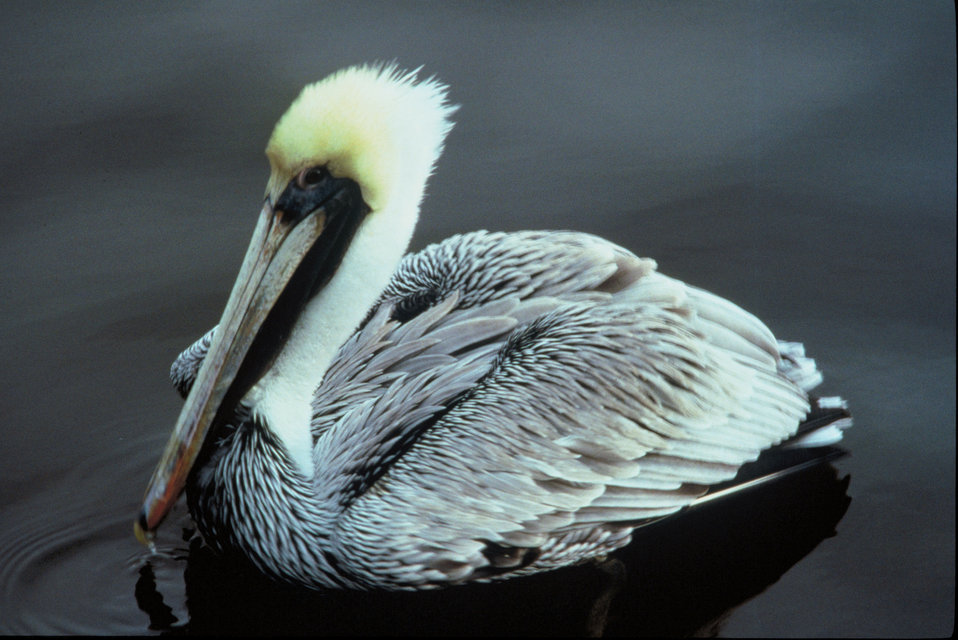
Brown Pelican.